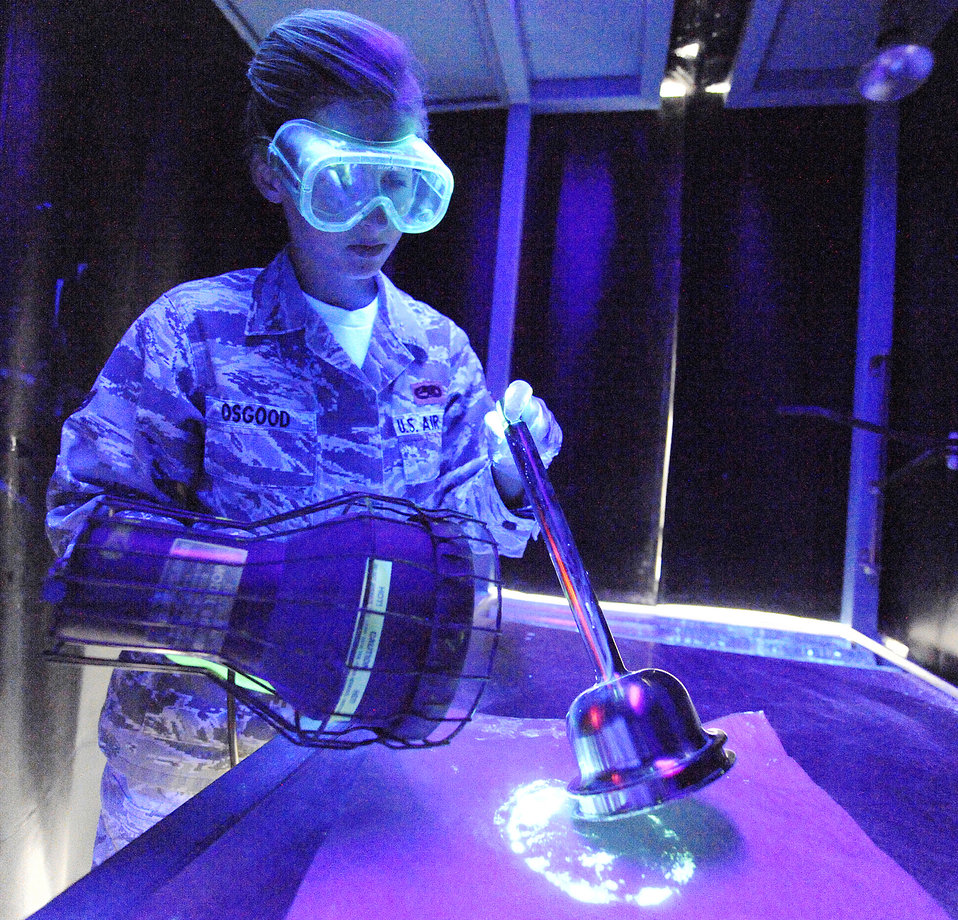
Close inspection

Airman 1st Class Danna Osgood, with the 1st Equipment Maintenance Squadron Non-Destructive Inspection shop, checks an F-15 Eagle bell house hydraulic component March 22, 2010, at Langley Air Force Base, Va., for cracks and flaws.